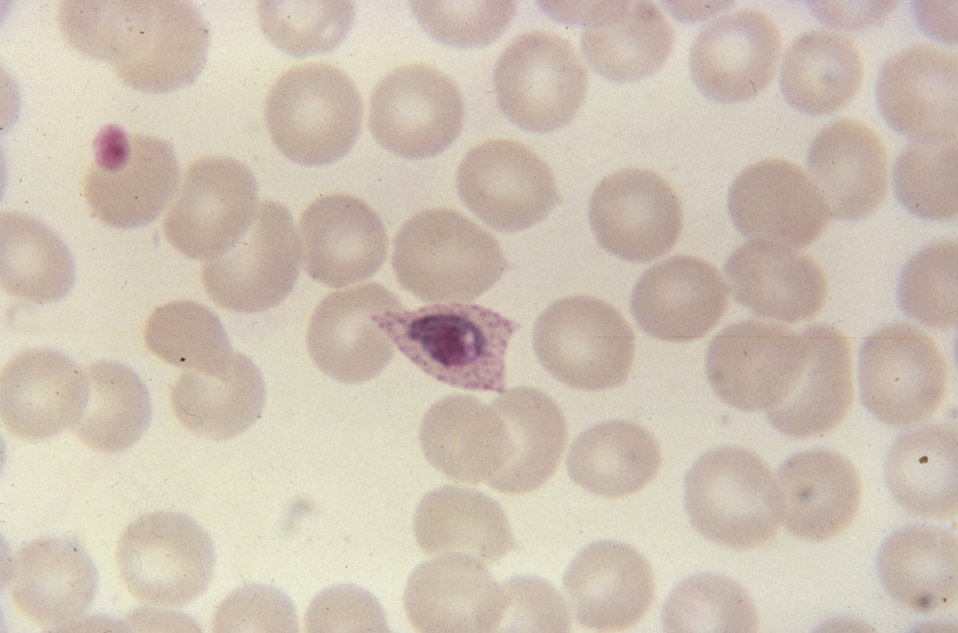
This blood smear photomicrograph reveals a growing Plasmodium ovale trophozoite within a fimbriated oval RBC.